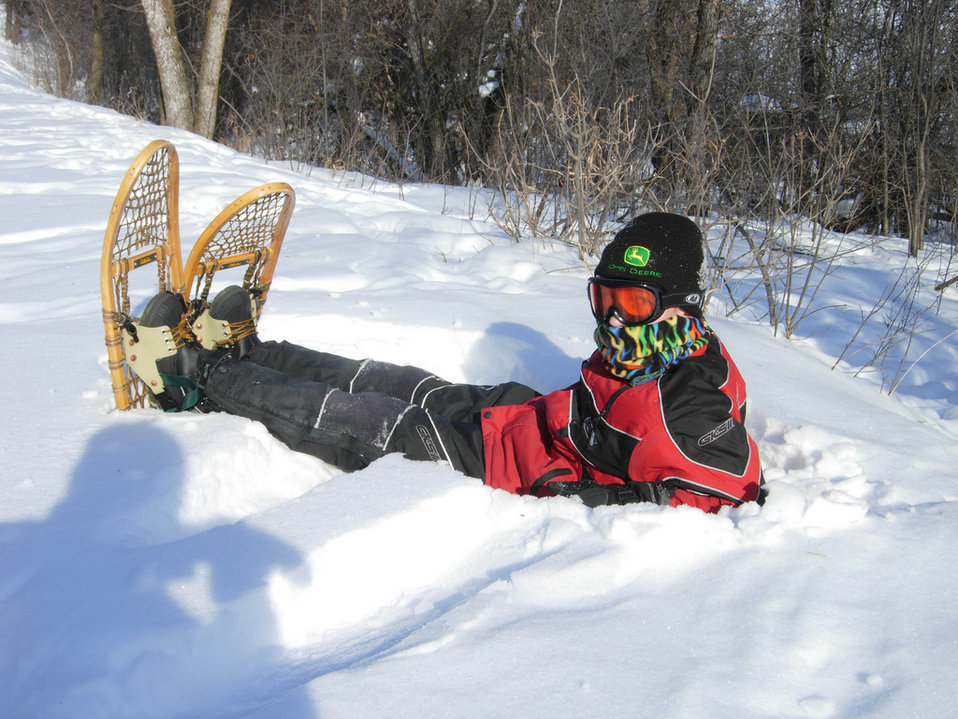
Sitting one out

Snowshoer at Des Lacs Refuge, ND